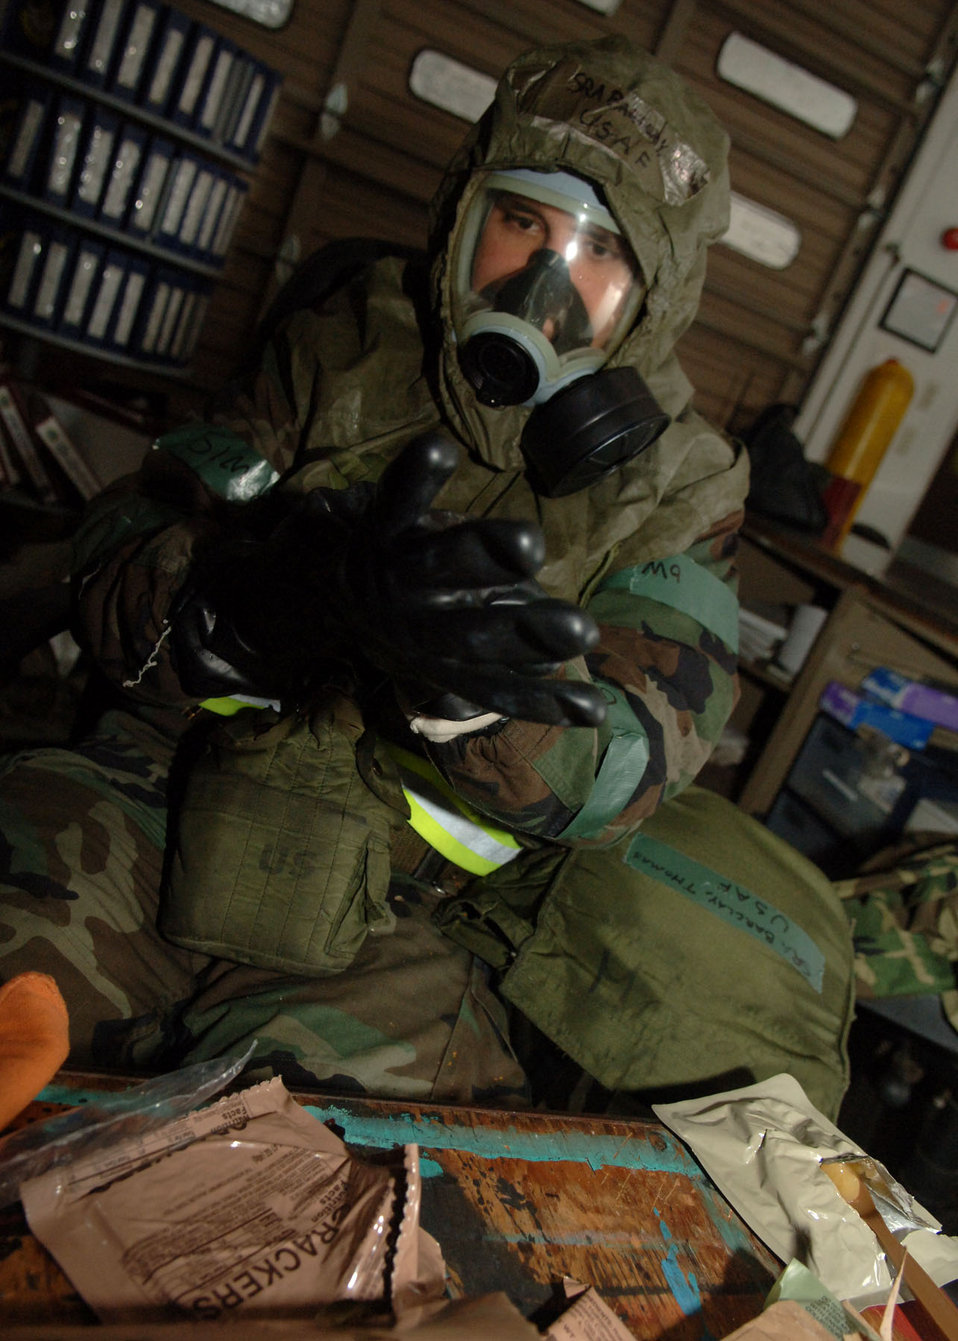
Practicing to stay safe

Senior Airman Thomas Barclay suits up for a mission-oriented protective posture 4 during a simulated alarm red attack at Yokota Air Base, Japan, during a 374th Air Wing exercise. MOPP levels relate to chemical or biological hazards. Airman Barclay is with the 374th Maintenance Squadron.